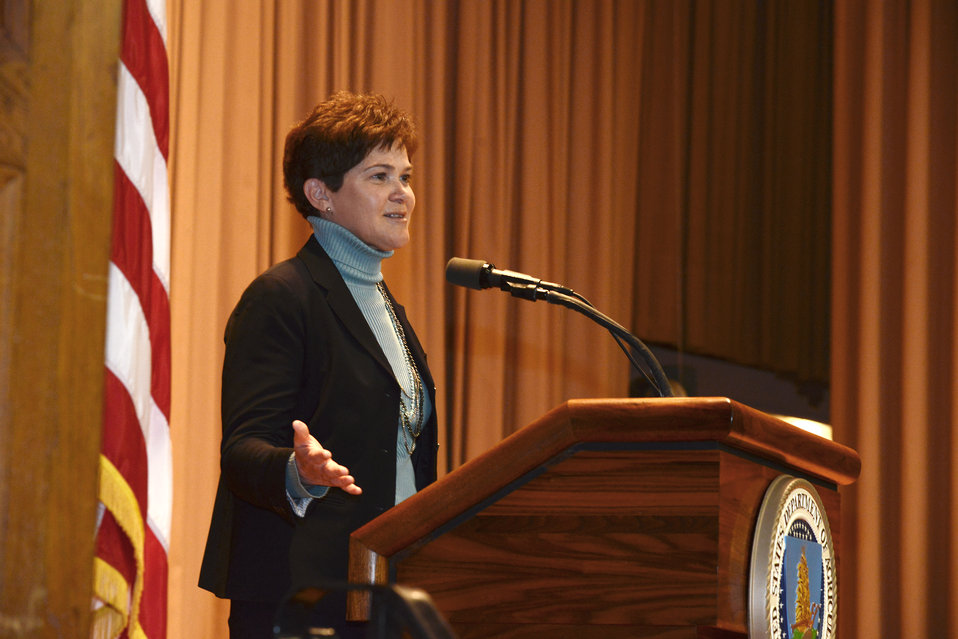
Agriculture Deputy Secretary Krysta Harden speaks at the U.S. Department of Agriculture’s (USDA) Women’s History Month Observance in the Jefferson Auditorium at USDA on Thursday, Mar. 13, 2014. The theme for this year’s observance is “Celebrating Women of Character, Courage, and Commitment”.